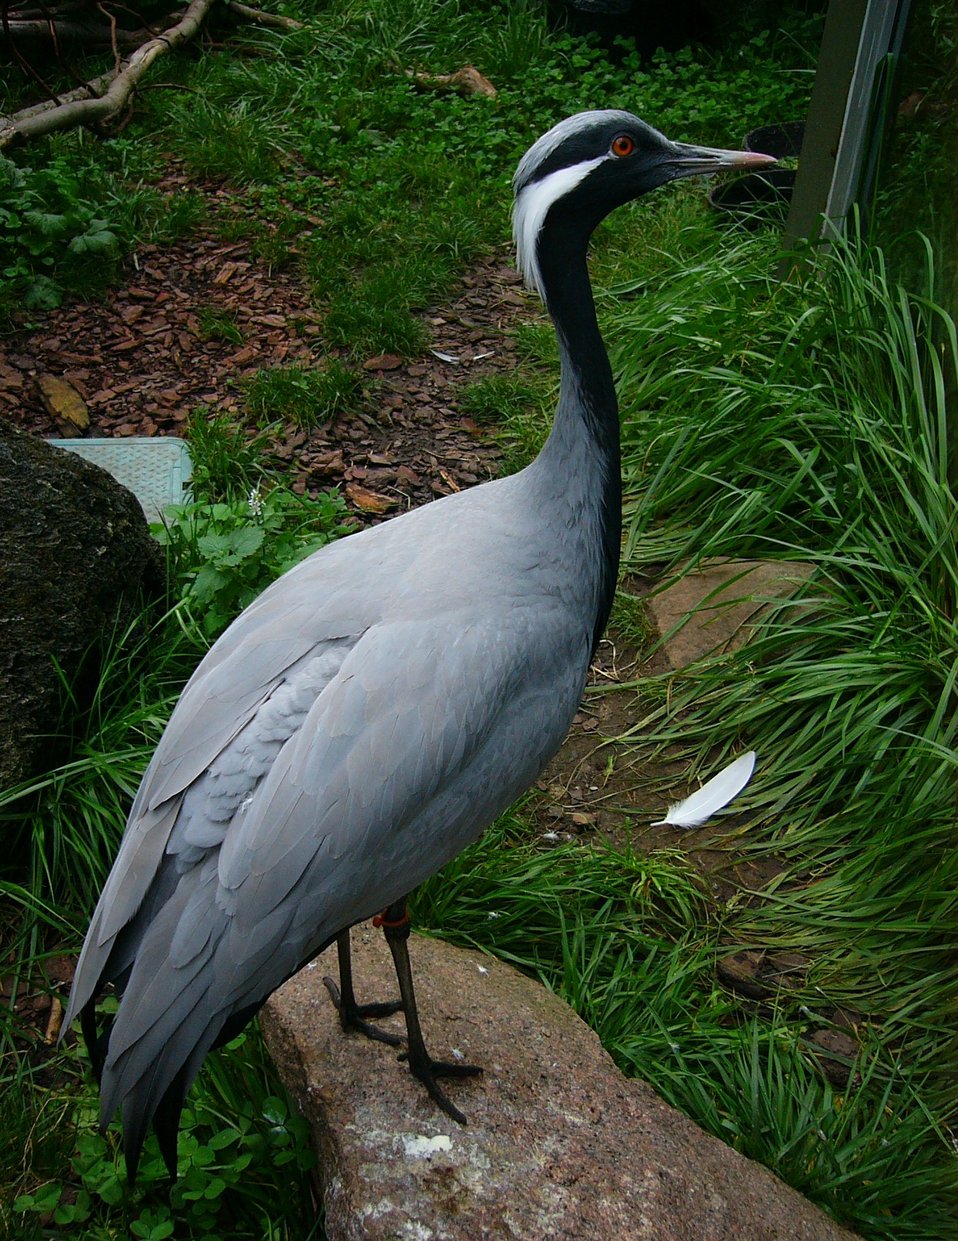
Damoiselle Crane in Toronto Zoo. Photographed by User:Menchi himself